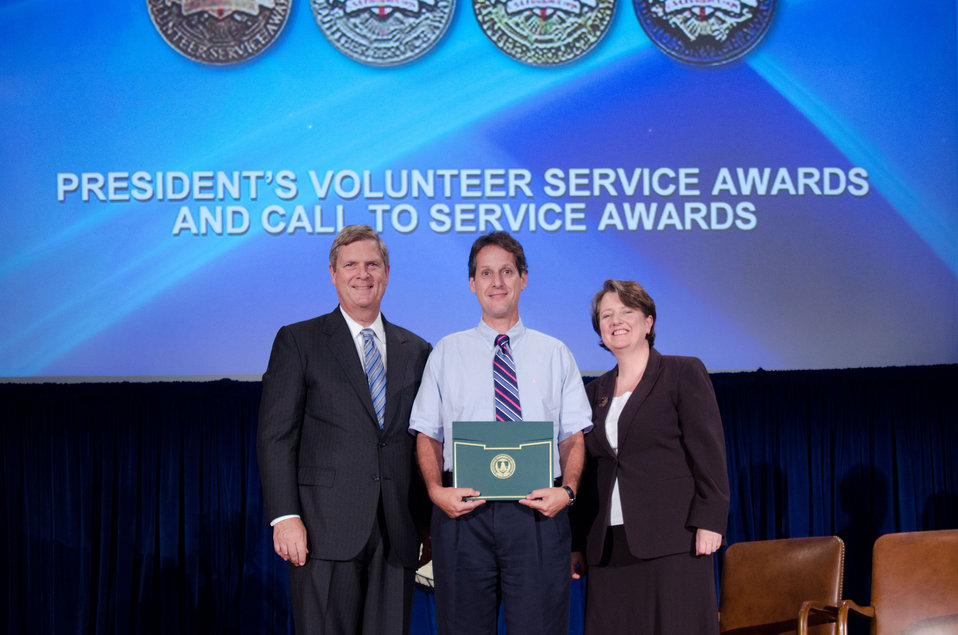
Agriculture Secretary Tom Vilsack (l) and Deputy Secretary Kathleen Merrigan (r), presents the President’s Volunteer Service Awards and Call to Service Award to Lynvel Johnson accepting on behalf of Scott Parkhurst, Food Safety and Inspection Service. On Wednesday, September 14, 2011 in the Jefferson Auditorium at the US Department of Agriculture in Washington, DC.